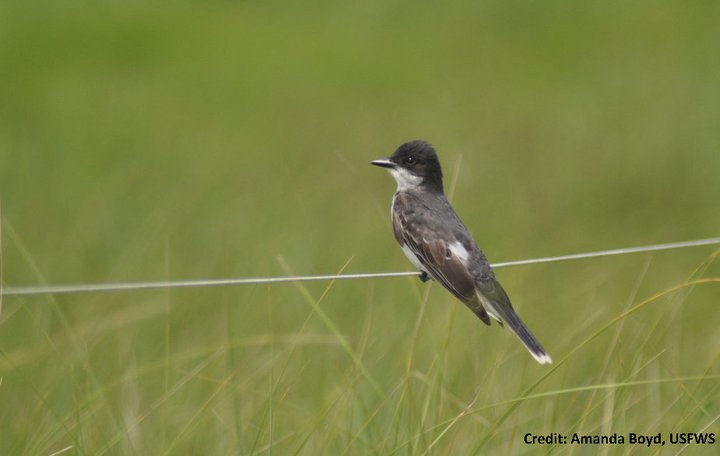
Eastern Kingbird

An Eastern kingbird at the Nantucket National Wildlife Refuge, MA.